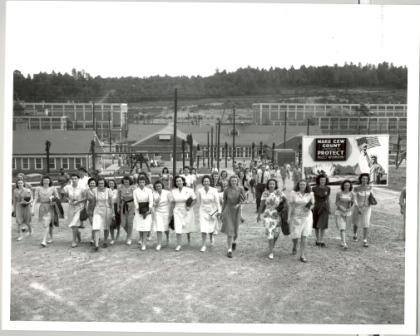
Women Workers Shift Change Y-12 - compressed